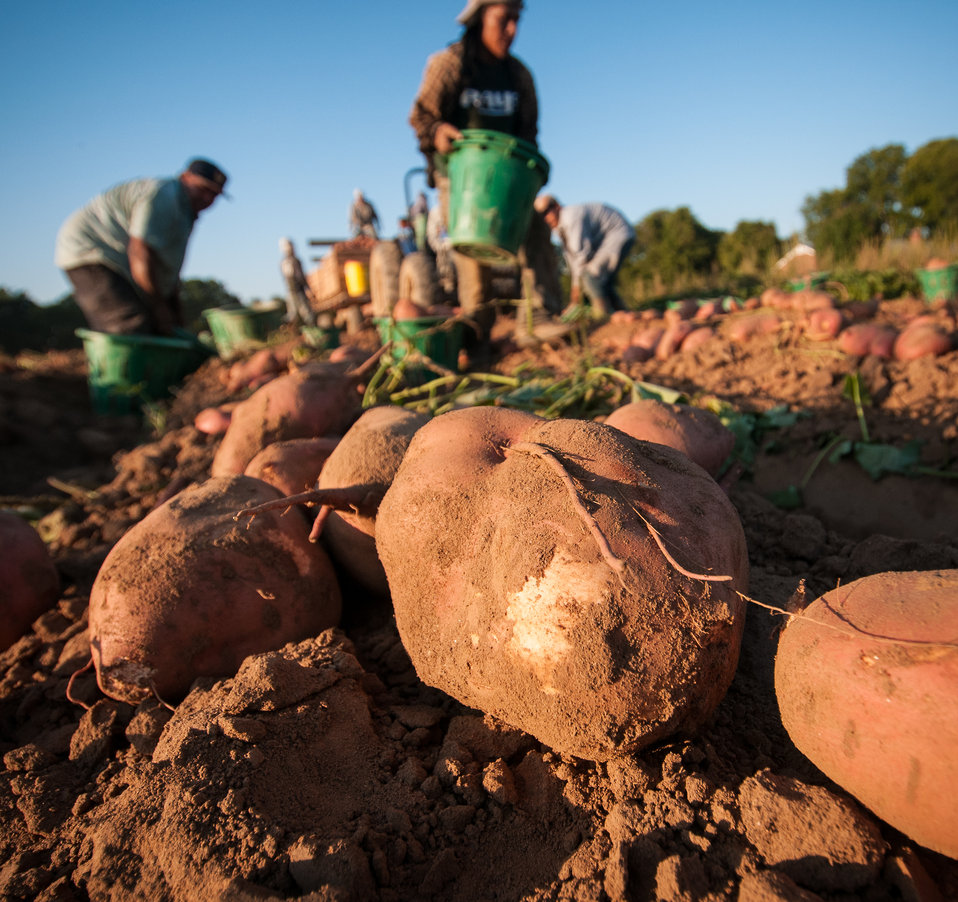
Migrant workers carefully lift large sweet potatoes as they pick and sort according the potatoes to size at Kirby Farms in Mechanicsville, VA on Sep. 20, 2013. Fresh from the ground the red skin is easily marred (light spot) and hand picking helps keep them looking good. Kirby Farms is a third-generation family farm that covers 500 acres, and generates produce and grains on a year-around operation. Please see the photoset description for more information about this harvest.